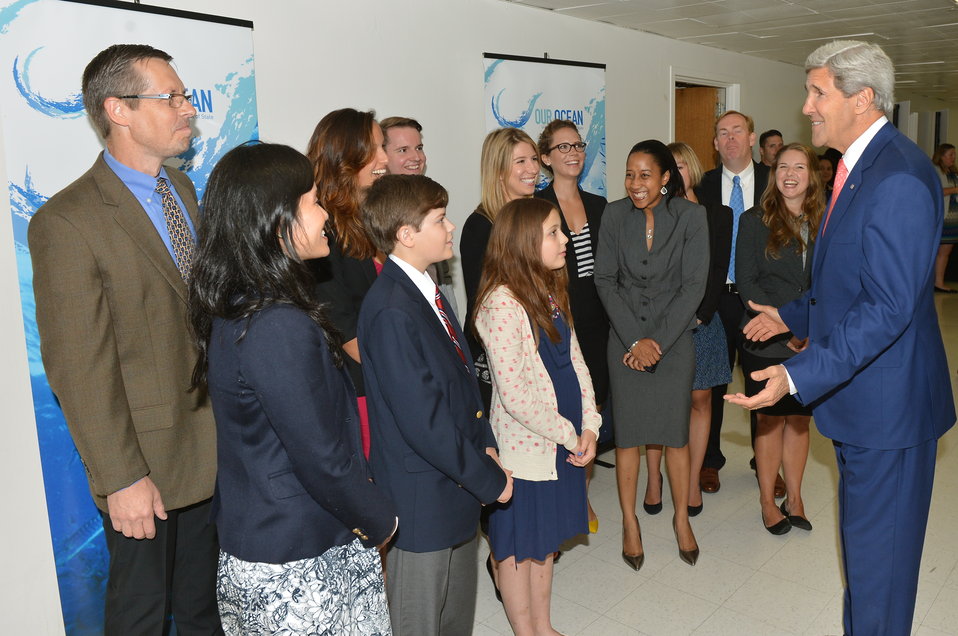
Secretary Kerry with 'Our Ocean' Meetup Group

U.S. Secretary of State John Kerry greets the 'Our Ocean' Meetup group participants. The participants were selected from a list of applicants to attend the 'Our Ocean' conference at the U.S. Department of State in Washington, D.C. on June 16, 2014.